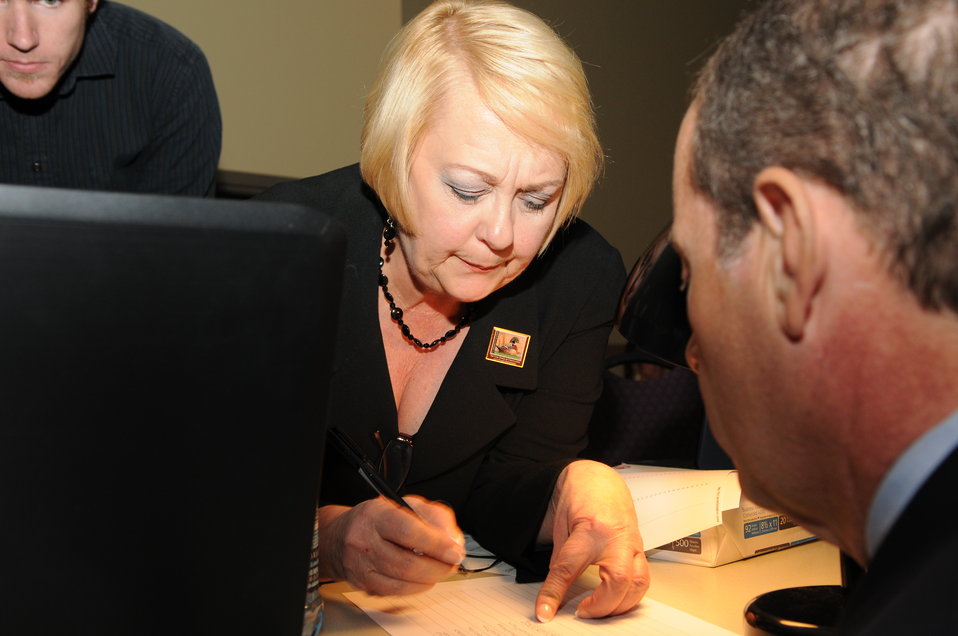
Tallying the Scores

The U.S. Fish & Wildlife Service sponsored the 2012 Federal Duck Stamp Art Contest September 28 and 29 in Ogden, Utah, at Weber State University. A panel of five judges was responsible for choosing the art work used to design the 2013-2014 Migratory Bird Hunting and Conservation Stamp.